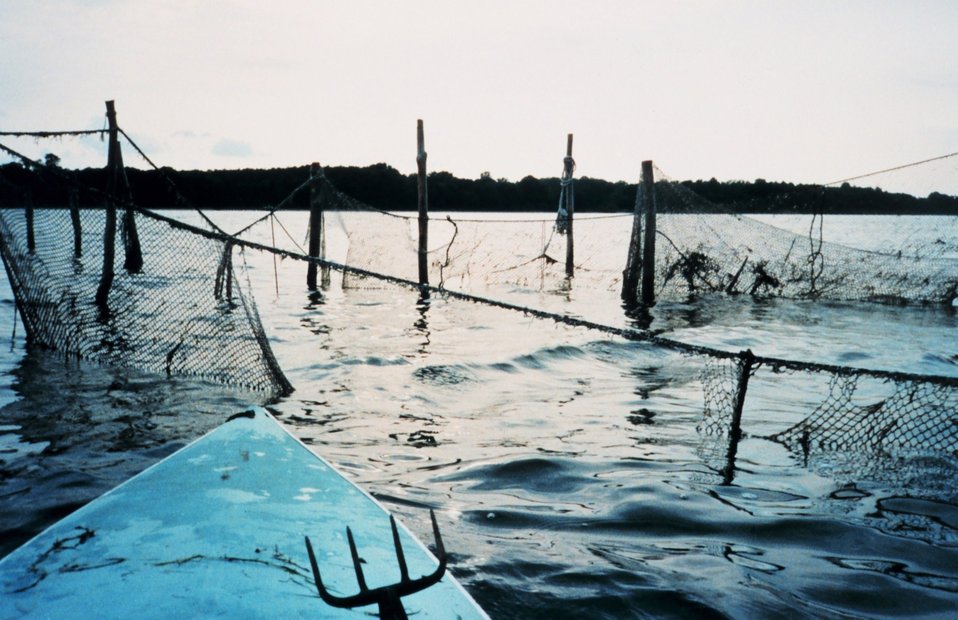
An abandoned pound net. These are used to catch fish, but also entraps many turtles and aquatic birds.